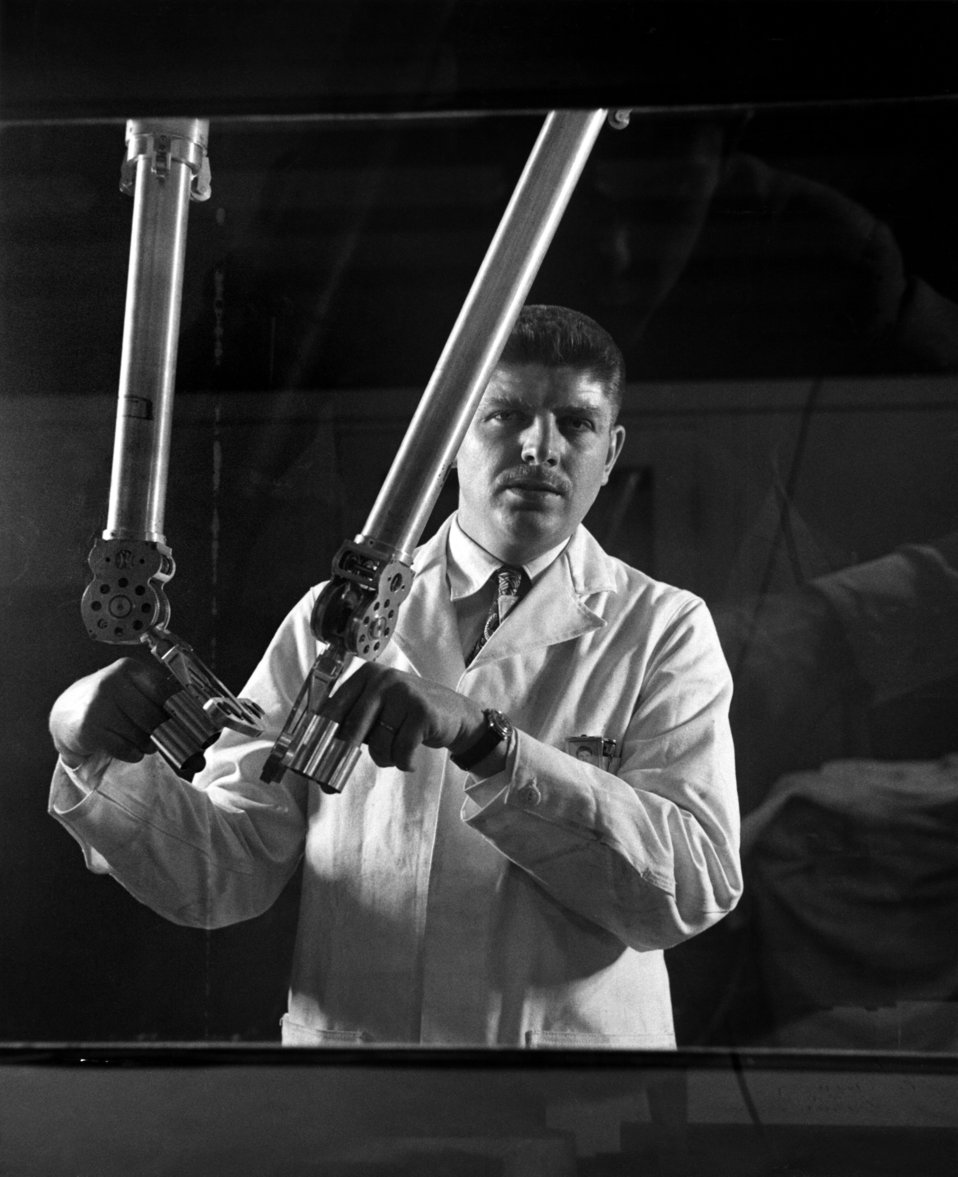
Technician With Manipulators ORNL Reactor

7770-27 Ed Westcott 2-13-1952 Oak Ridge Tennessee